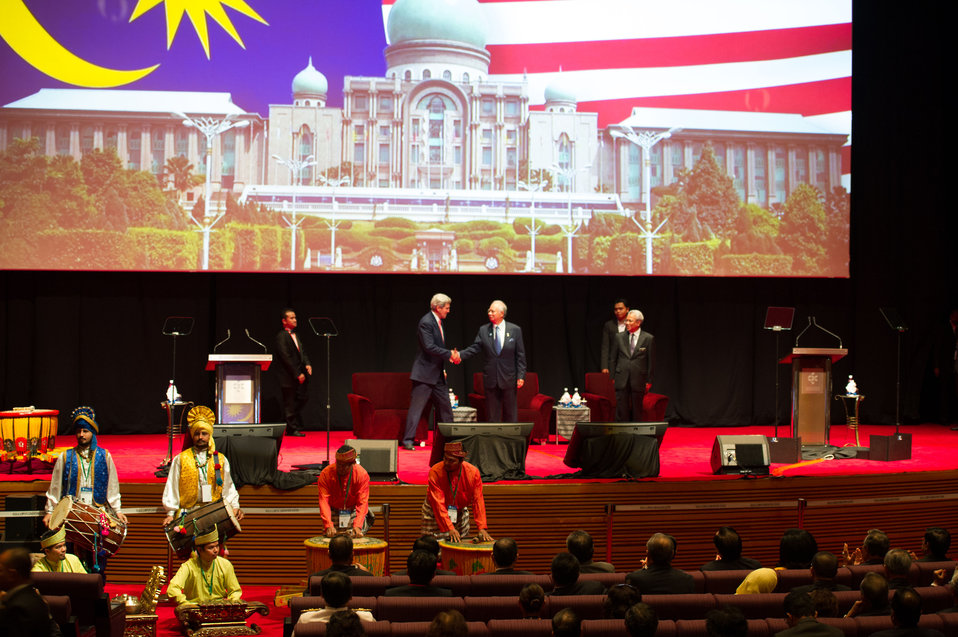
Secretary Kerry Shakes Hands With Malaysia's Prime Minister Najib at Global Entrepreneurship Summit

U.S. Secretary of State John Kerry shares the stage with Malaysia's Prime Minister Datuk Seri Najib Tun Razak before his keynote address at the opening of the 4th Global Entrepreneurship Summit (GES) in Kuala Lumpur, Malaysia, on October 11, 2013.